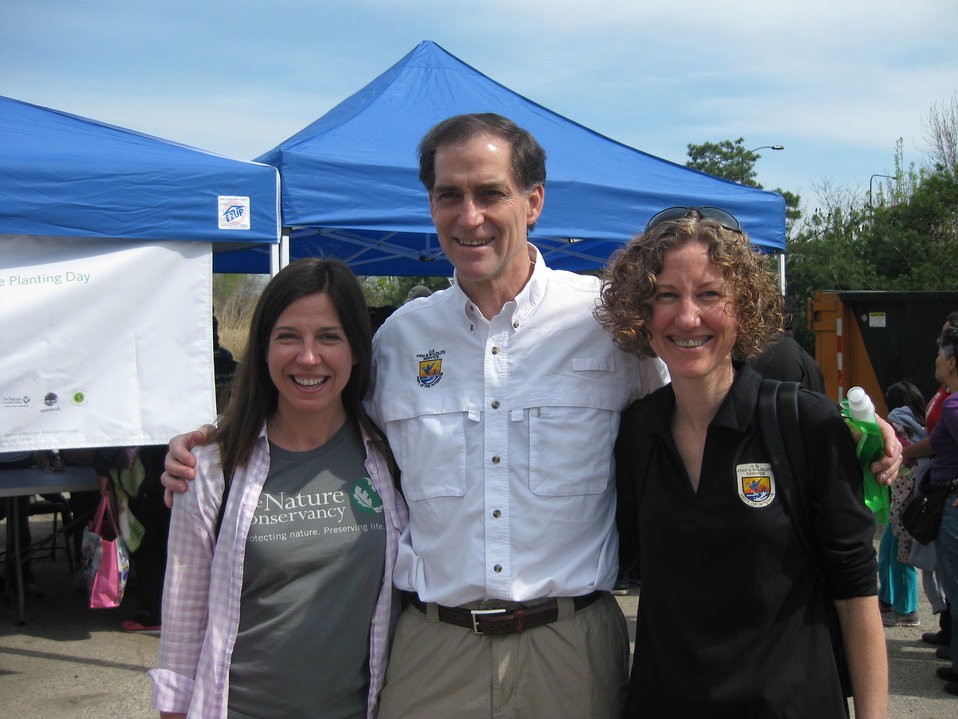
IL TNC MichelleCarr, FWS Director Dan Ashe and Chicago Field Office Supervisor LouiseClemency

Chicago Park District Burnham Corridor Community Planting Day
May 10, 2014